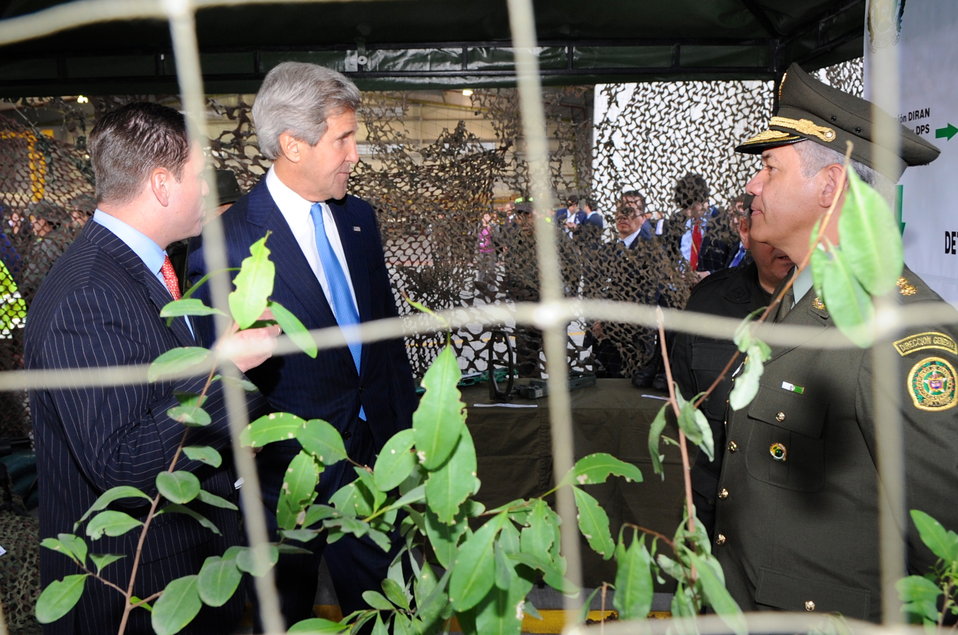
Secretary Kerry Hears About Drug Crop Eradication

With cocoa plants before him, U.S. Secretary of State John Kerry hears about drug crop eradication during a counter-narcotics tour in Bogota, Colombia, on August 12, 2013.